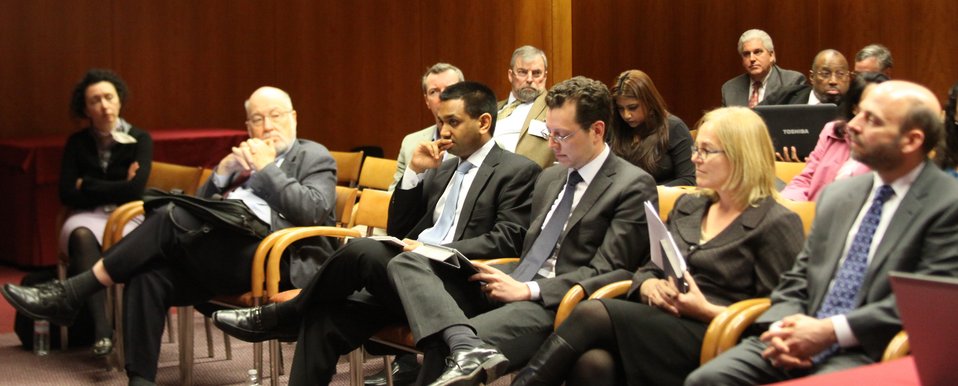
March 27, 2013 Gigabit City Challenge: Broadband Networks Workshop